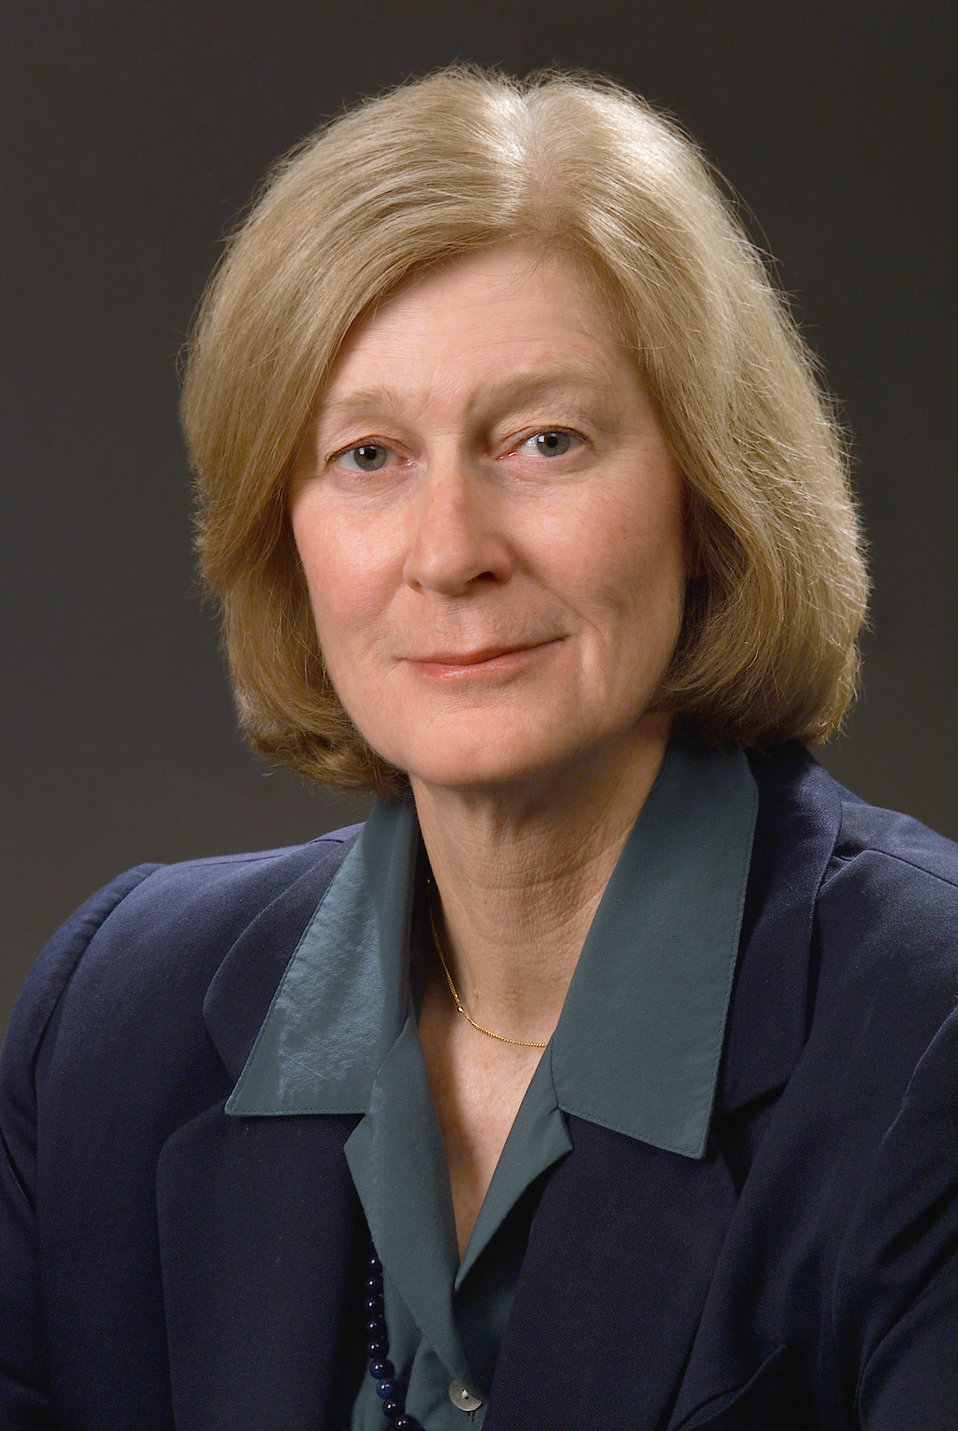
This is Dr. Claire Broome, MD of the Centers for Disease Control and Prevention, Atlanta, Georgia.